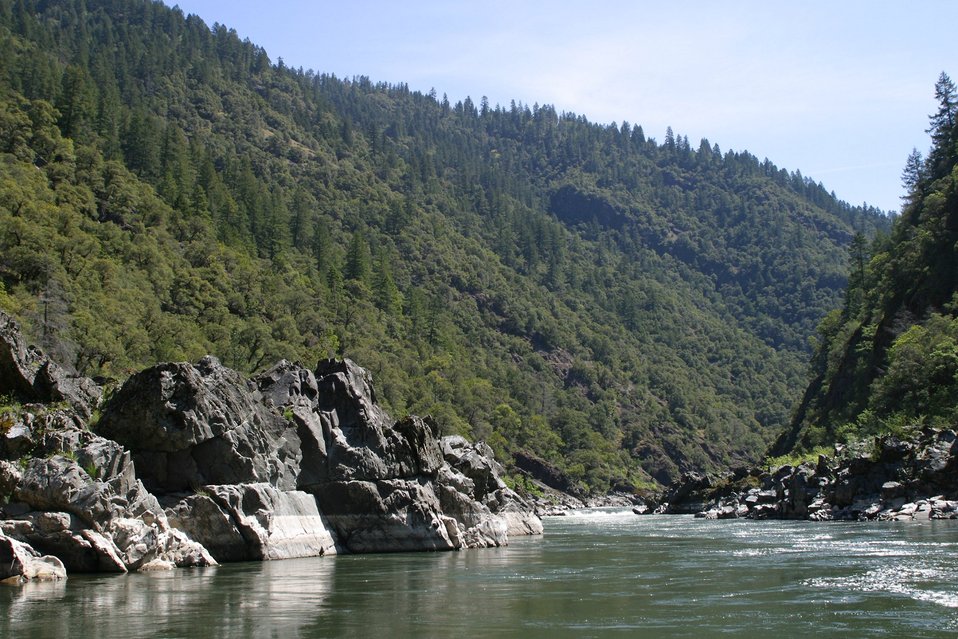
Wild section of the Rogue River from Grave Creek to Foster Bar May 19 to May 22.